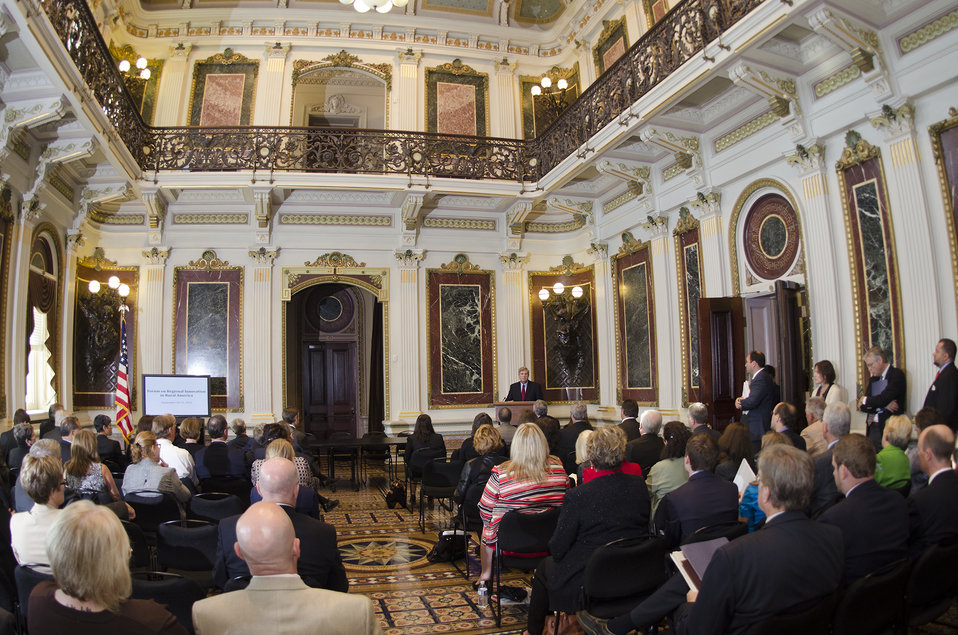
Agriculture Secretary Tom Vilsack addresses the 2nd Annual meeting of the White House Rural Forum concerning Regional Innovation at the Executive Office Building in Washington, D.C. on Wednesday, Sep. 18, 2013.